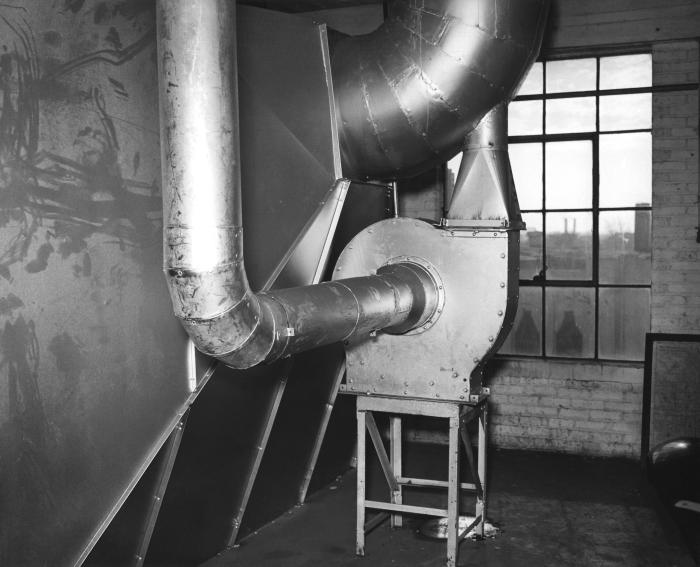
This historic image was provided by the Center for Disease Control's (CDC), National Institute for Occupational Safety and Health (NIOSH). The photographed depicted an air ejector attached to a spray booth equipped with a 30 inch blower, and was powered by a 5 HP motor. This device extracted the contaminated atmosphere from inside the booth, filtering out the noxious particulates, while supplying the booth's interior with cleaned air.